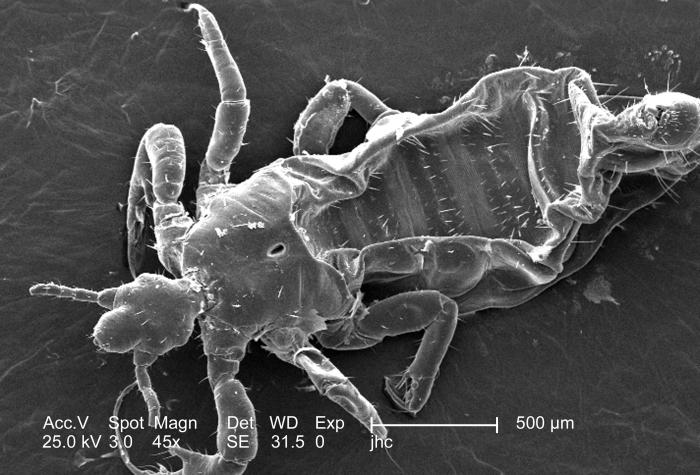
Under a relatively low magnification of 45x, this 2006 scanning electron micrograph (SEM) depicted a dorsal, or superior view, of a male louse, Pediculus humanus var. corporis. The head, or cephalic region is at the left, from which its two antennae were extended. The head was attached to the thoracic region, which gave rise to its three pairs of jointed legs. While the abdominal region, towards the far right, is the region in which was housed the stomach, and intestines. The 'jointed' nature of its extremities, designates this organism as a member of the phylum Arthropoda, and the fact that there are three pairs of legs, the louse is, thereby, placed into the class, Insecta. Note the small, 'hair-like' structures adorning the exoskeletal surface of this insect. These are known as 'setae', and are not hairs at all, but extensions of the chitinous exoskeletal surface, which provide the organism with sensorial data about its surroundings.